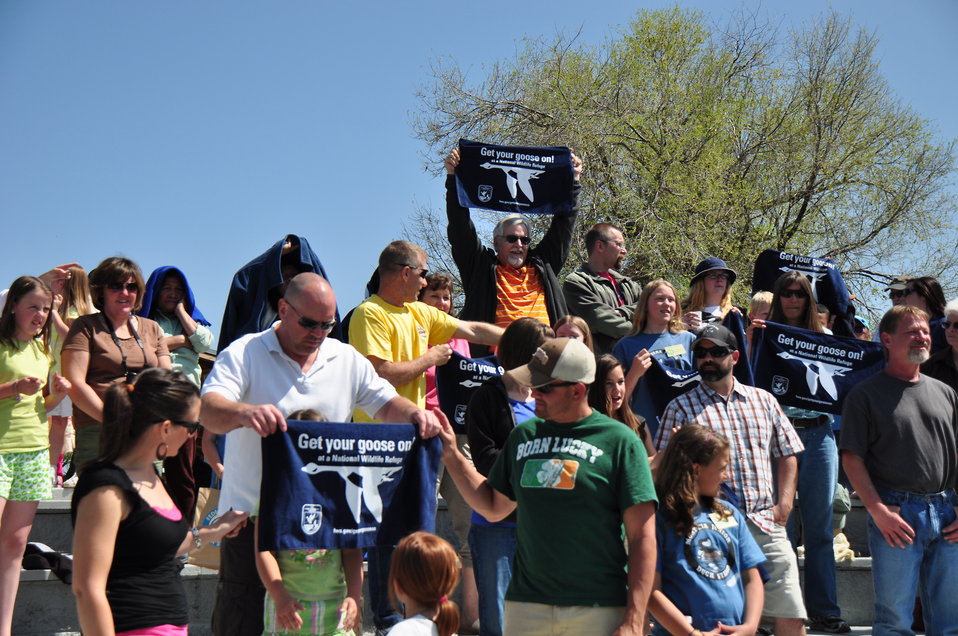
Get Your Goose On!!!

More than 100 people attended the 2012 Montana Junior Duck Stamps award ceremony. The folks pictured here posed with their towels as a videographer captured footage of them screaming, in unison, 'Get Your Goose On!'